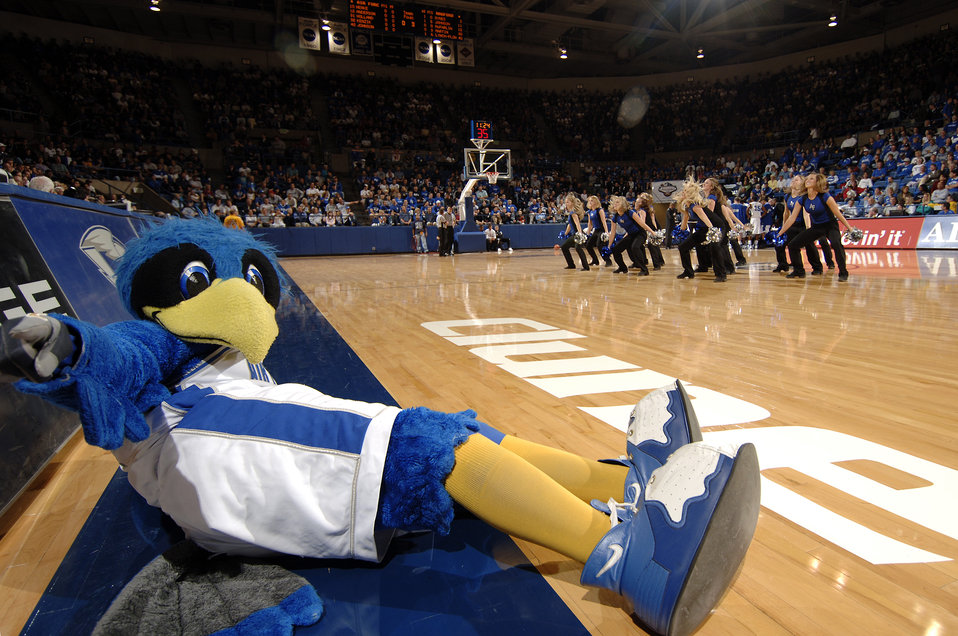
Falcons score overtime victory

The Air Force Falcons' mascot, The Bird, slides while the Air Force dance team motivates the crowd during a time out at Clune Arena Nov. 19. The Air Force defeated the Radford Highlanders 52-47 in overtime. Air Force, under first-year coach Jeff Reynolds, is 4-0 on the season.